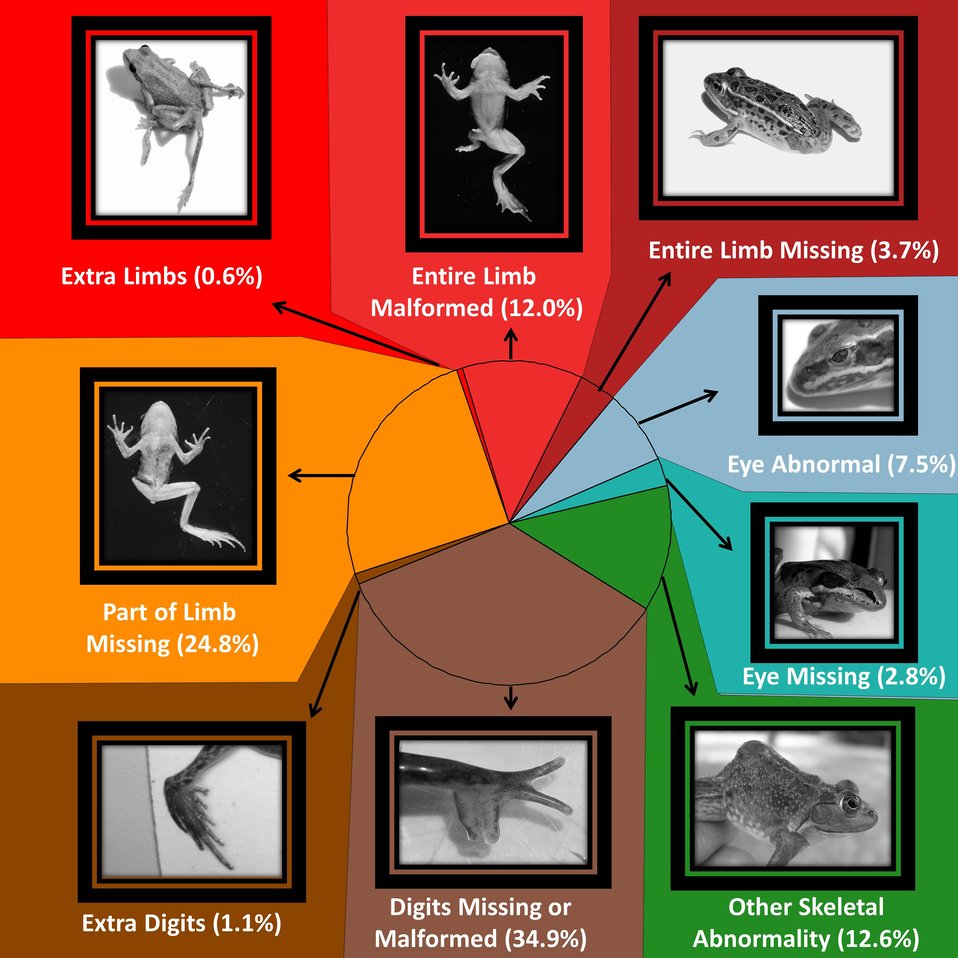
Figure 1 abnormalitypie

Percentages of abnormal frogs found in the field surveys. Percentages in photo figure are proportions of each abnormality out of total abnormalities.